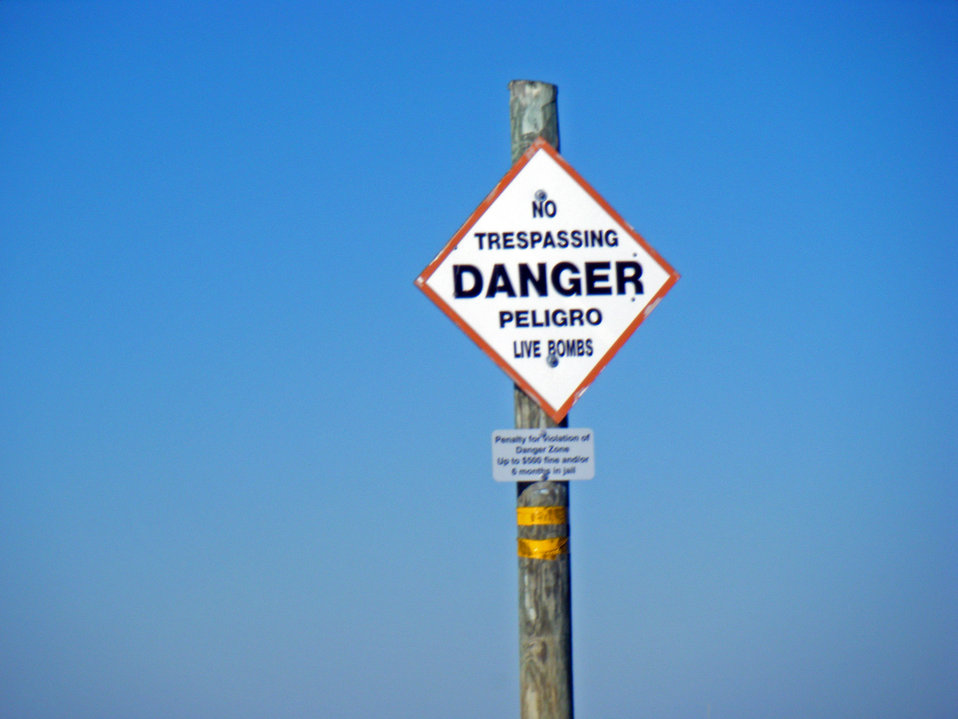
Danger sign

Plum Tree Island National Wildlife Refuge is closed to the public due to unexploded ordinance throughout the refuge.